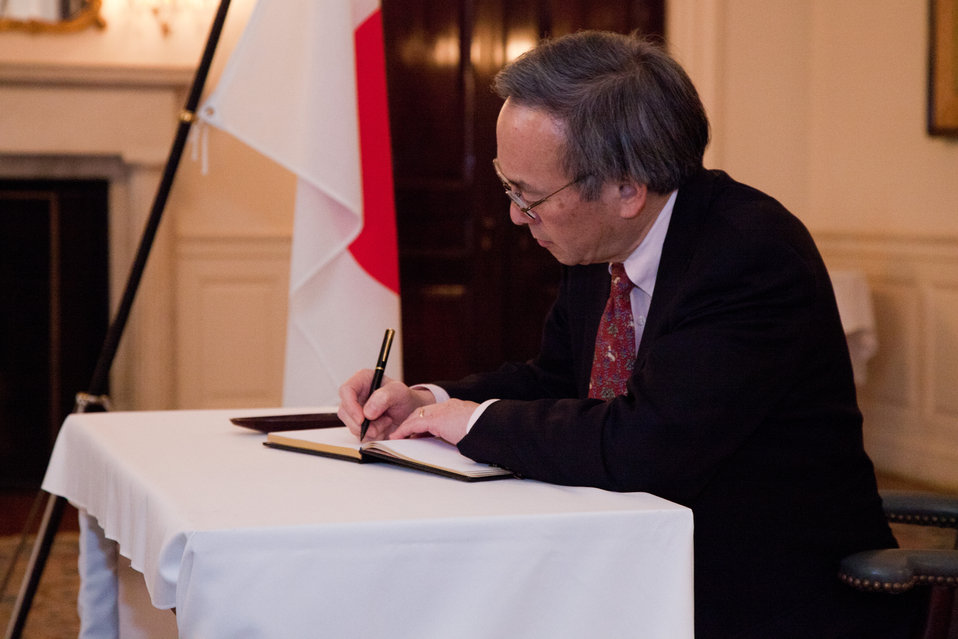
Sec. Chu visits Japanese Embassy 3 of 8

Sec. Steven Chu signs a book of condolences for the tragedy in Japan.